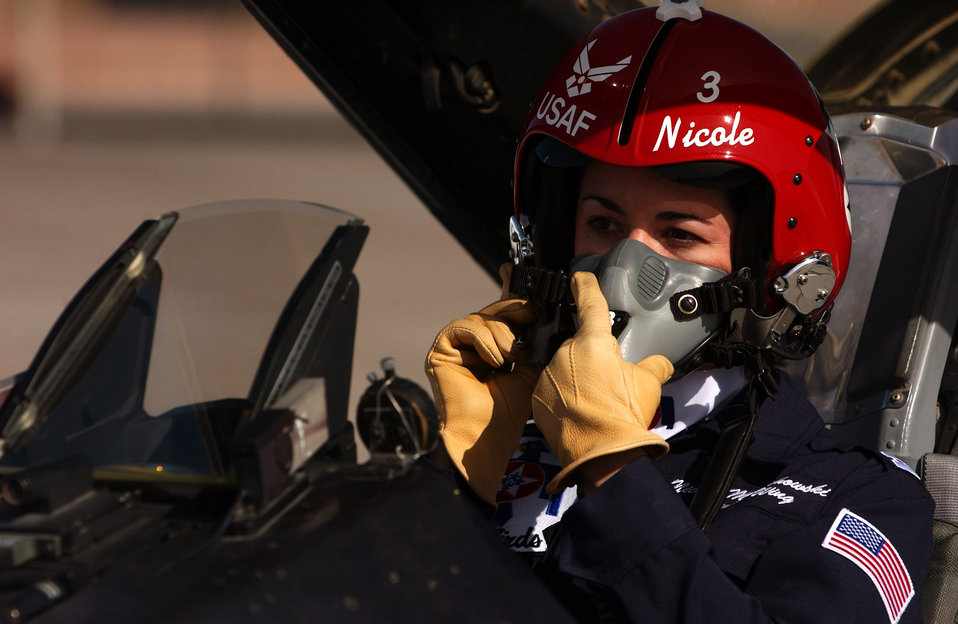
Pilots bid adieu to Thunderbird duty

Maj. Nicole Malachowski prepares to take off for a practice sortie with the Thunderbirds in an F-16 Fighting Falcon. Major Malachowski is the Thunderbird #3 right wing pilot and just finished her two-year tour with the Air Force Demonstration Squadron.